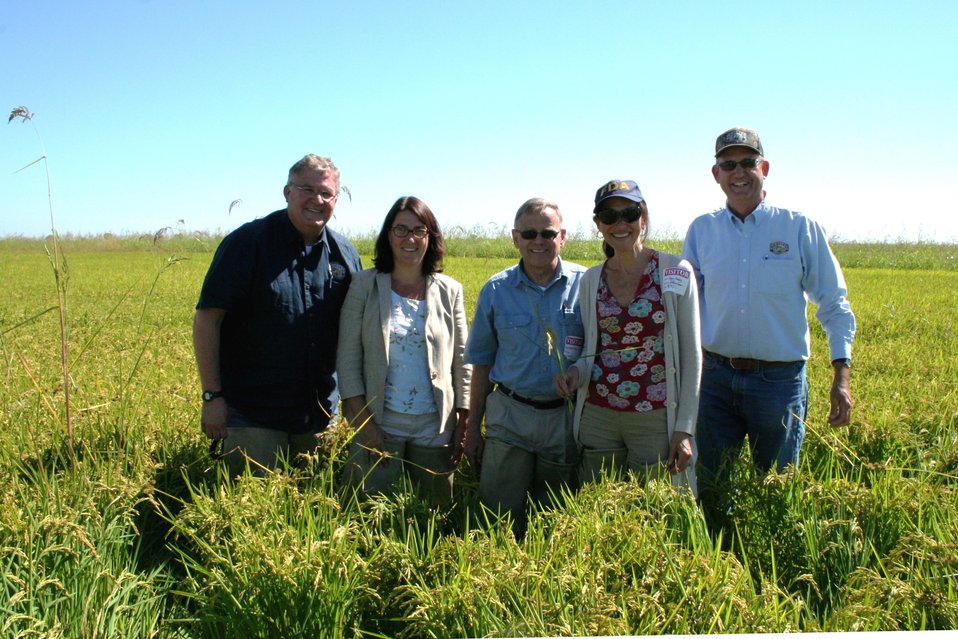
FDA's Rice Tour: Looking for Insights on Arsenic (0865)

FDA Commissioner Margaret A. Hamburg and colleagues visited research facilities and rice farms in California on Sept. 4-5, 2013 in an effort to gain a greater understanding of the presence of arsenic in rice. At the Lundberg Family Farms in Richvale, Calif., from left, are Bryce Lundberg, Laura Batcha of the Organic Trade Association, FDA Deputy Commissioner for Foods and Veterinary Medicine Michael Taylor, Hamburg, and Eric Lundberg. For more information, read the FDA Voice blog:

• On Farms and in Labs, FDA and Partners Are Working to Get Answers on Arsenic in Rice